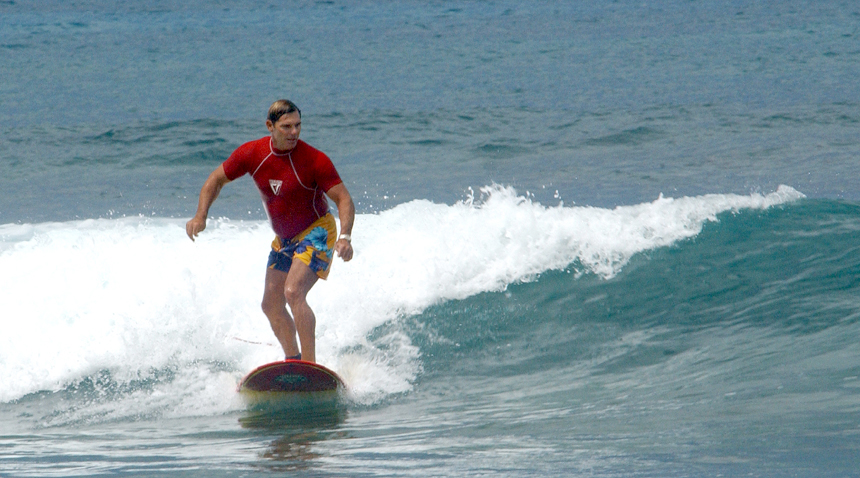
Surfer dude

KEWALO BASIN, Hawaii -- Air Force retiree Buster Kellum attacks a wave during the Military Surfing Invitational here June 27. Kellum took second place in three events helping the Air Force team earn second place overall in the